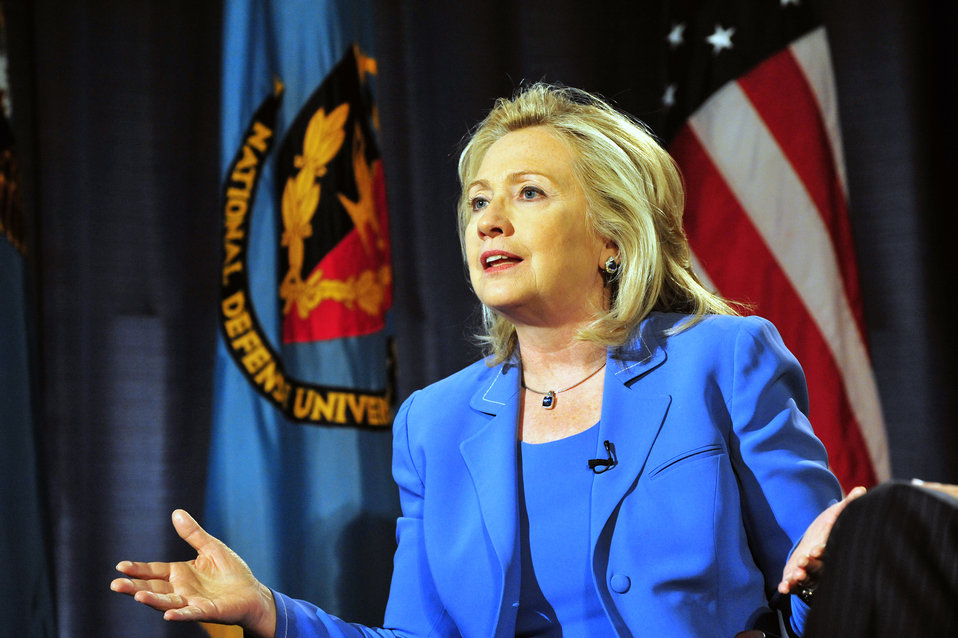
National Defense University Hosts a Conversation With Secretaries Clinton and Panetta

The National Defense University hosts a conversation with U.S. Secretary of State Hillary Rodham Clinton and U.S. Secretary of Defense Leon Panetta, moderated by Frank Sesno, Director of the School of Media and Public Affairs at George Washington University, at NDU in Washington, D.C., on August 16, 2011.